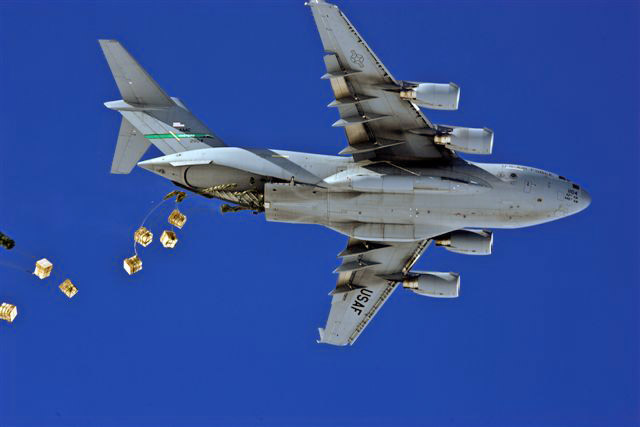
Joint effort key to success in Deep Freeze

A McChord Air Force Base, Wash., C-17 Globemaster III airdrops containerized delivery system bundles to the South Pole. The C-17 is part of 13th Air Force-led Operation Deep Freeze, a unique joint and total force mission that has supported the National Science Foundation and U.S. Antarctic Program since 1955. By validating the C-17's capability to complete airdrop missions at the geographical South Pole, Joint Task Force-Support Forces Antarctica demonstrated its ability to provide mid-winter emergency re-supply and flexible support to the National Science Foundation and U.S. Antarctica Program.